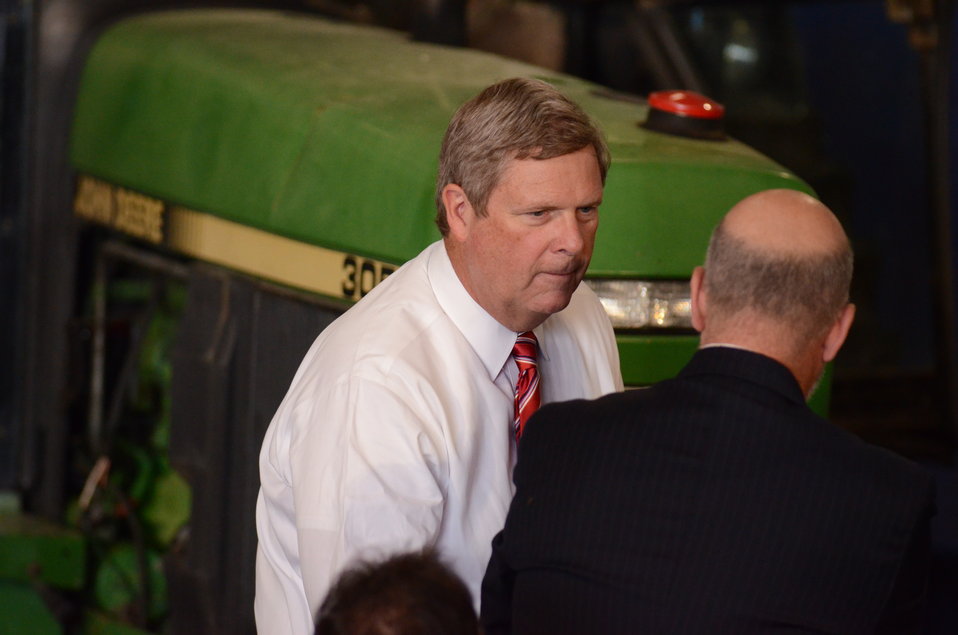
Agriculture Secretary and chair of the White House Rural Council Tom Vilsack shakes hands with members of the audience at the Northeast Iowa Community College, IA, prior to the White House Rural Economic Forum, on Tuesday, Aug. 16, 2011.